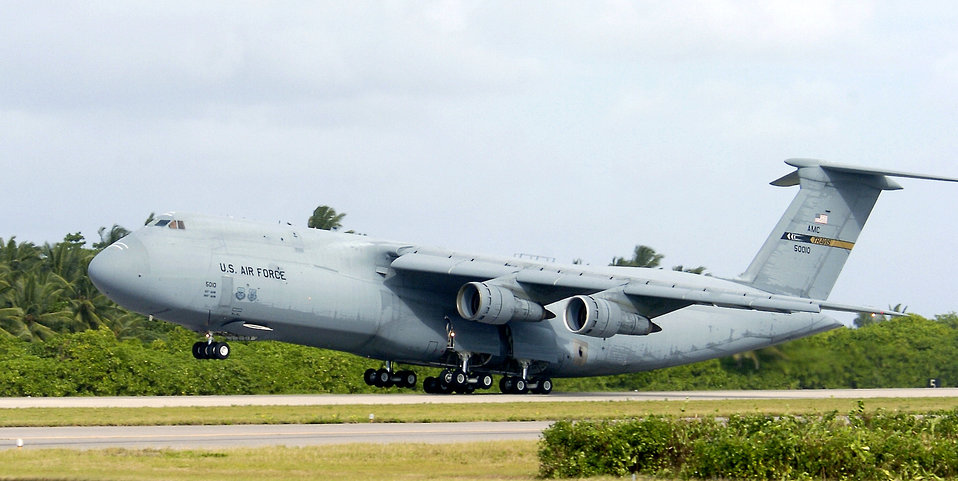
Intercontinental ranges

A C-5 Galaxy takes off from a forward operating location today. The C-5 is one of the largest aircraft in the world. The aircraft carries fully equipped combat-ready military units to any point in the world on short notice then provides field support required to help sustain the fighting force. Ground crews can load and off load the C-5 simultaneously at the front and rear cargo openings.